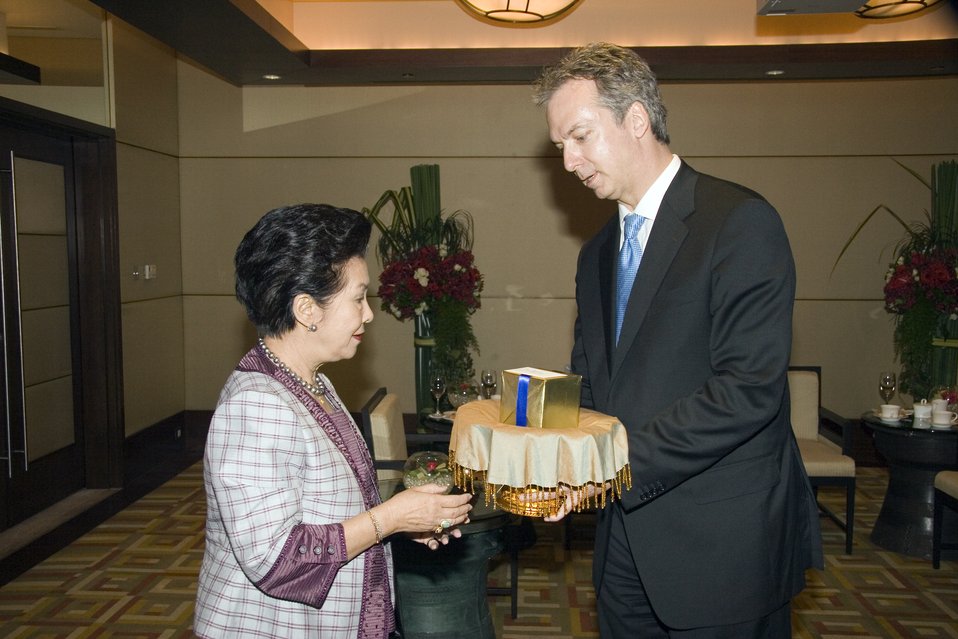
U.S. Ambassador to Thailand Meets With Thai Queen’s Lady-in-Waiting

U.S. Ambassador to Thailand Eric G. John presents a gift to the Queen’s Lady-in-Waiting, Thanpuying Nravadi Chaixanien, at the Conrad Hotel in Bangkok, Thailand July 21, 2009.